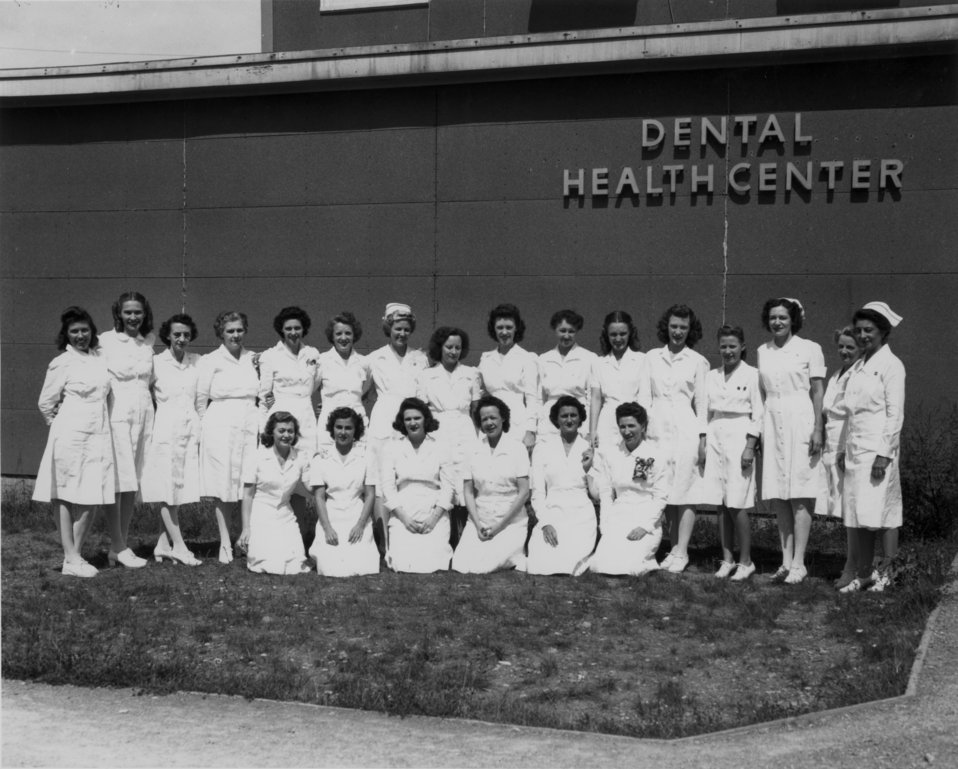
Dental Clinic Nurses Oak Ridge

pro1000 DOE photo by Ed Westcott 9/12/45
Oak Ridge Tennessee